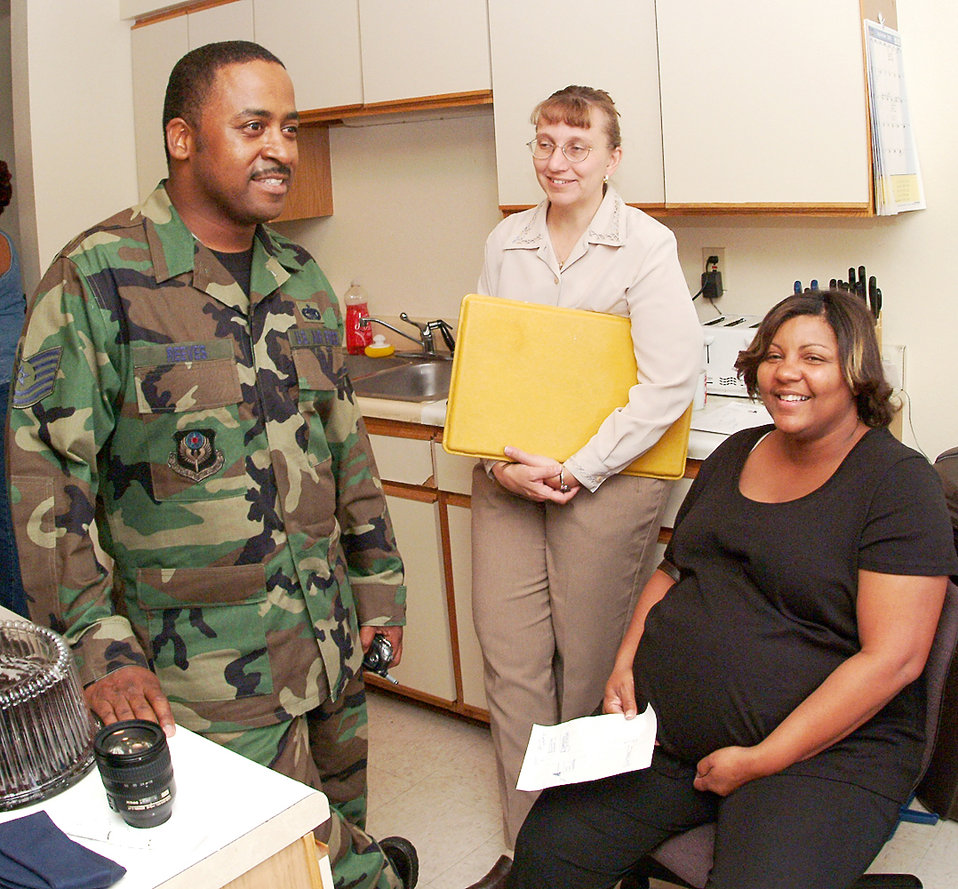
Hospitality

HURLBURT FIELD, Fla. -- Tech. Sgt. Christopher Reeves, his wife Donnice and Kathy Thompson (center) share a moment in the kitchen of the Reeves' home. Mrs. Thompson and a crew from the 53rd Wing at nearby Eglin Air Force Base had just dropped off dinner for the family of 22 who escaped Hurricane Katrina to stay here with the Reeves. Sergeant Reeves is assigned to the 16th Logistics Readiness Squadron here.